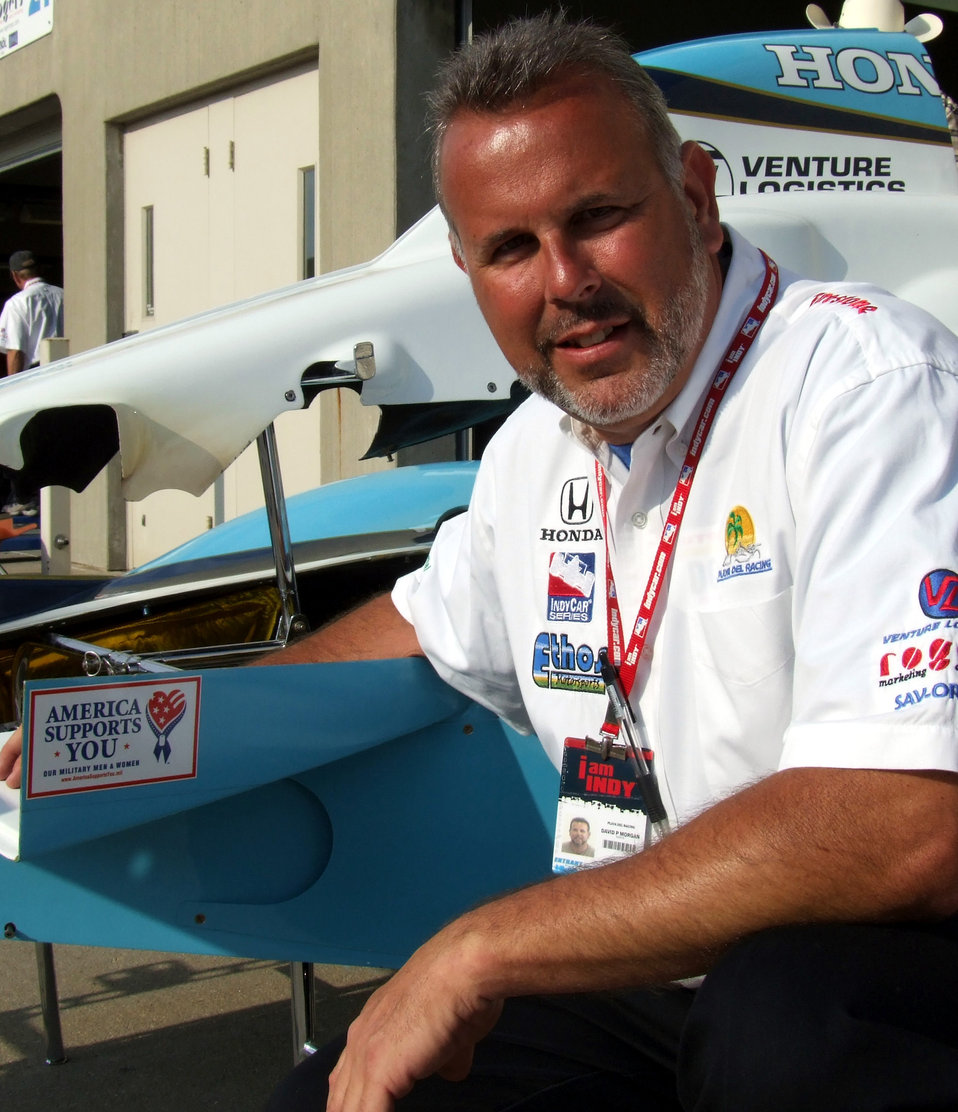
Indy Motor Speedway salutes servicemembers

David Morgan, team manager for Playa del Racing, shows off the